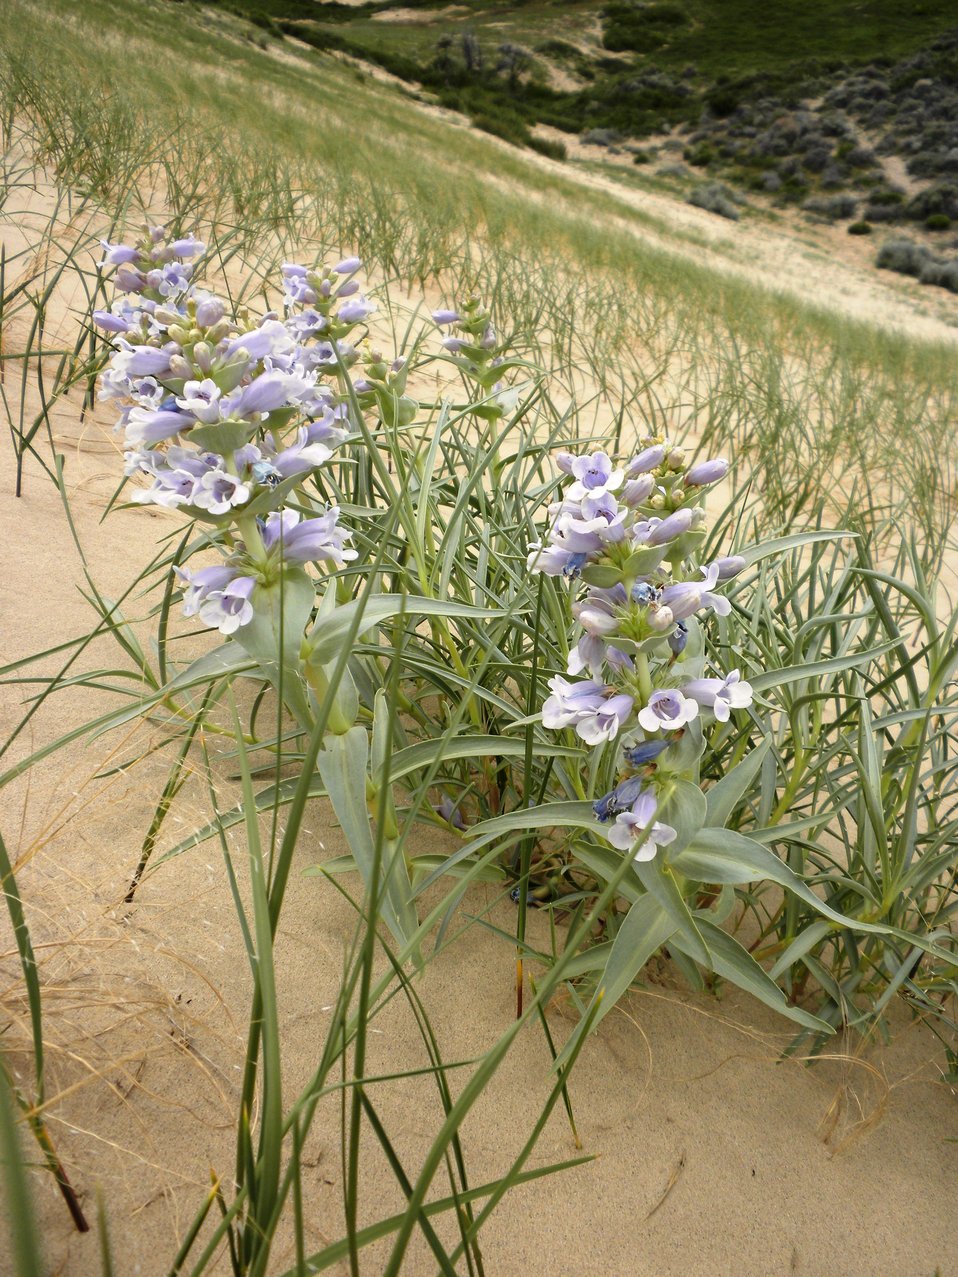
Blowout Penstemon - Wyoming

Blowout Penstemon (Penstemon haydenii) was listed as Endangered in 1987. It is a magnificent plant that is restricted to sparsely vegetated, early successional, shifting sand dunes and blowout depressions created by wind erosion.

Location: Bradley Peak, Carbon County, WY

Credit: Mark Bellis / USFWS

Photo Contest Entry #66